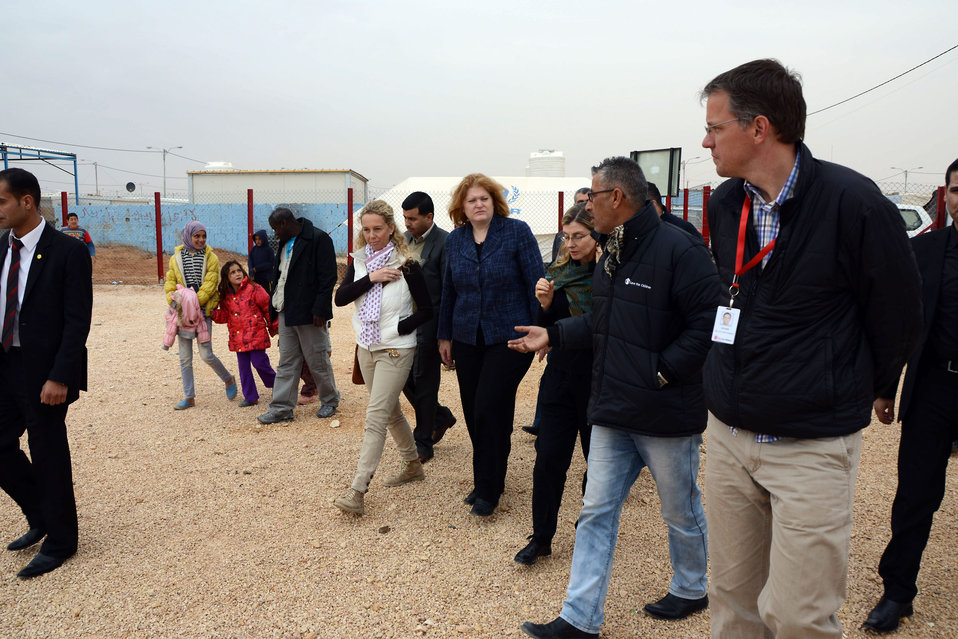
Assistant Secretary Richard and USAID Assistant Administrator Lindborg Visit the Zaatari Refugee Camp

Assistant Secretary of State for Population, Refugees, and Migration Anne Richard and USAID Assistant Administrator for Democracy, Conflict, and Humanitarian Assistance Nancy Lindborg visit the Zaatari refugee camp in Jordan on January 28, 2013.